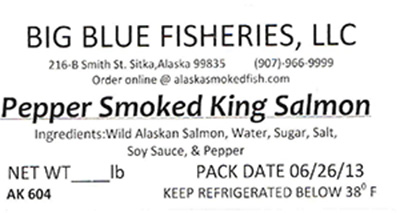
RECALLED – Salmon, Cod

September 30, 2013 – Product Recall – Big Blue Fisheries, Llc Recalls All Smoked Products From All Lots, Various Sizes, in Vacuum Packaging Because of Possible Health Risk.